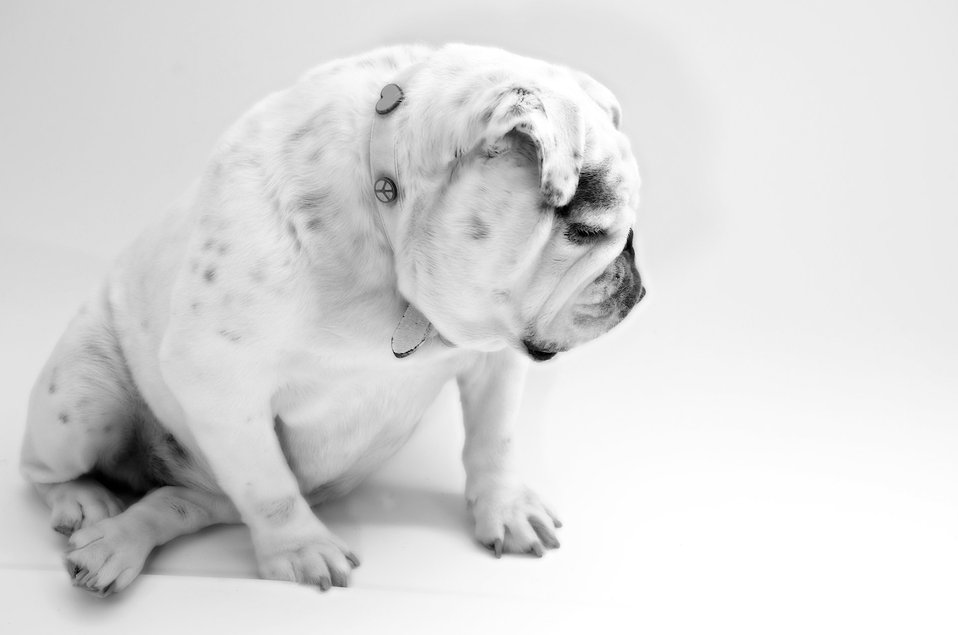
Mia

White bulldog.